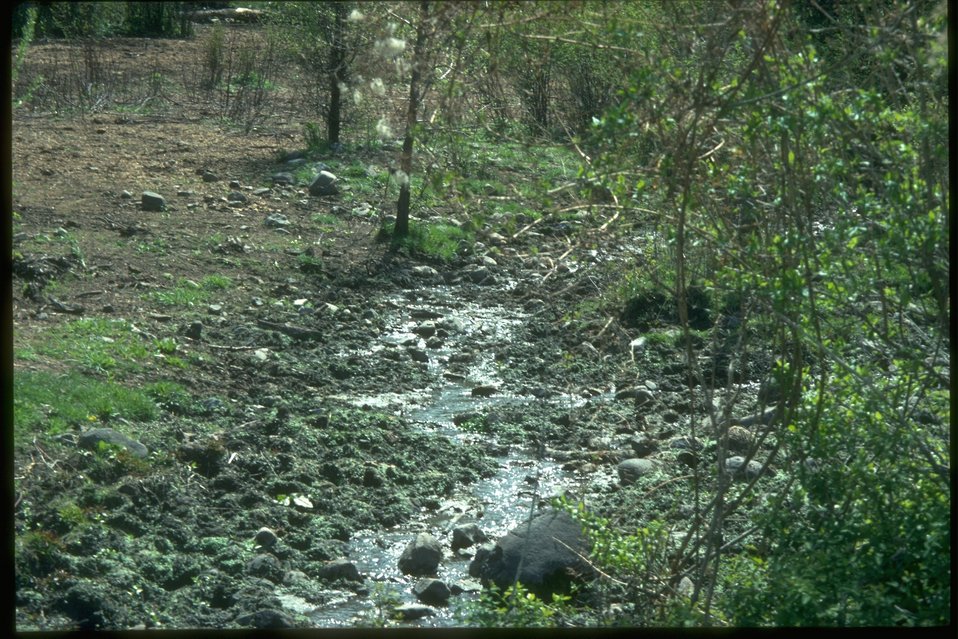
Long shot of a trampled spring showing the flow area.